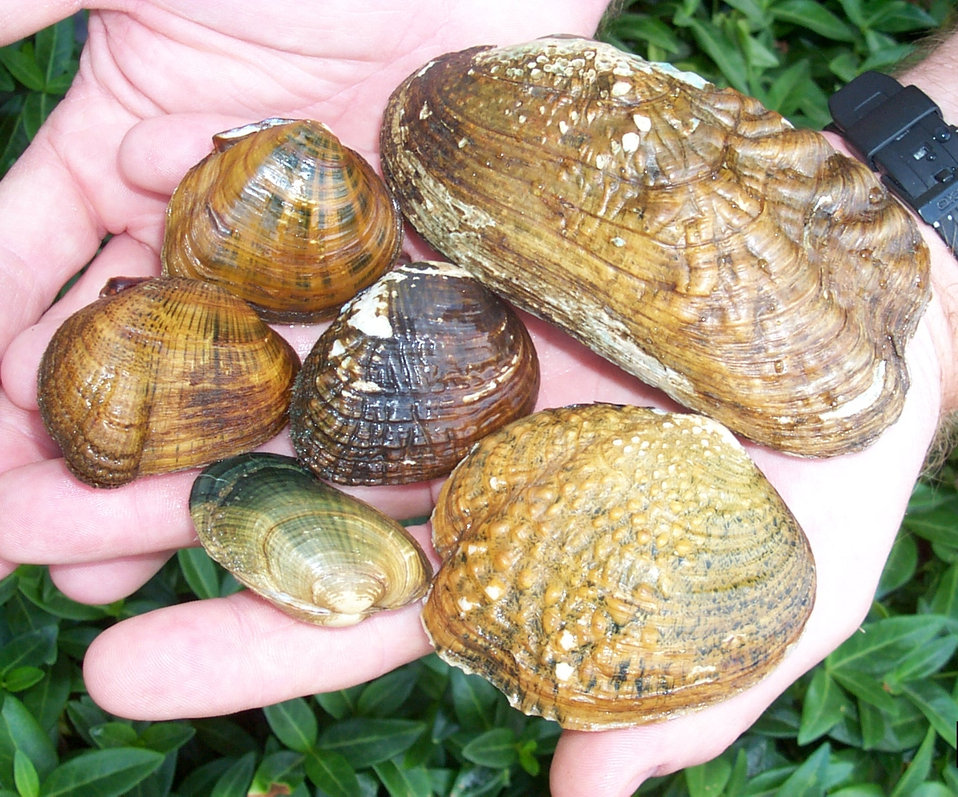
Endangered freshwater mussels in the Clinch and Powell River Watersheds in Virginia (Bottom diagonal row, left to right: Cumberlandian combshell, Oyster mussel. Middle Row: Shiny pigtoe, Birdwing pearlymussel, Cumberland monkeyface. Top row: Rough rabitsfoot)